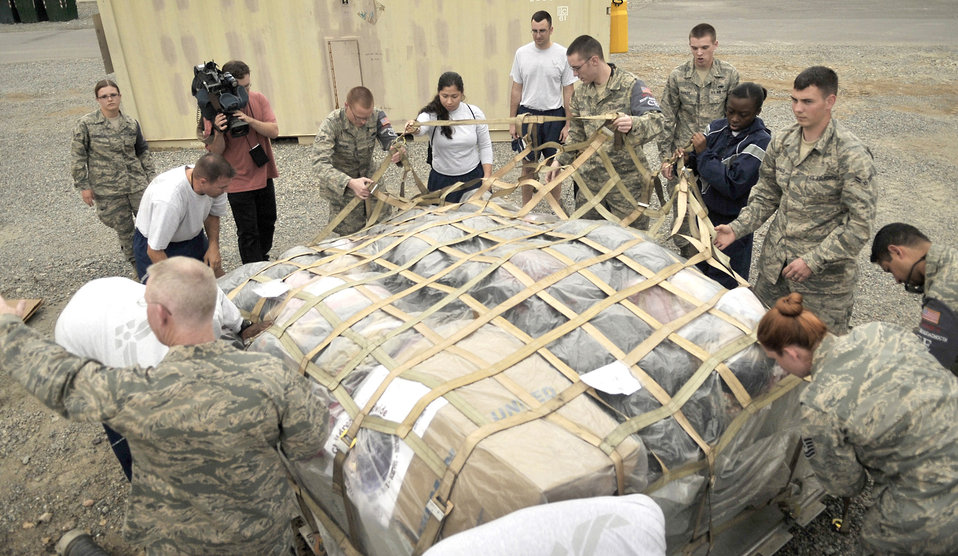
Kyrgyzstan school

Airmen at the Manas Transit Center, Kyrgyzstan, unpack a pallet of coats and blankets Oct. 17, 2010, for the Solnyshko school near the town of Vasilievka, Kyrgyzstan.